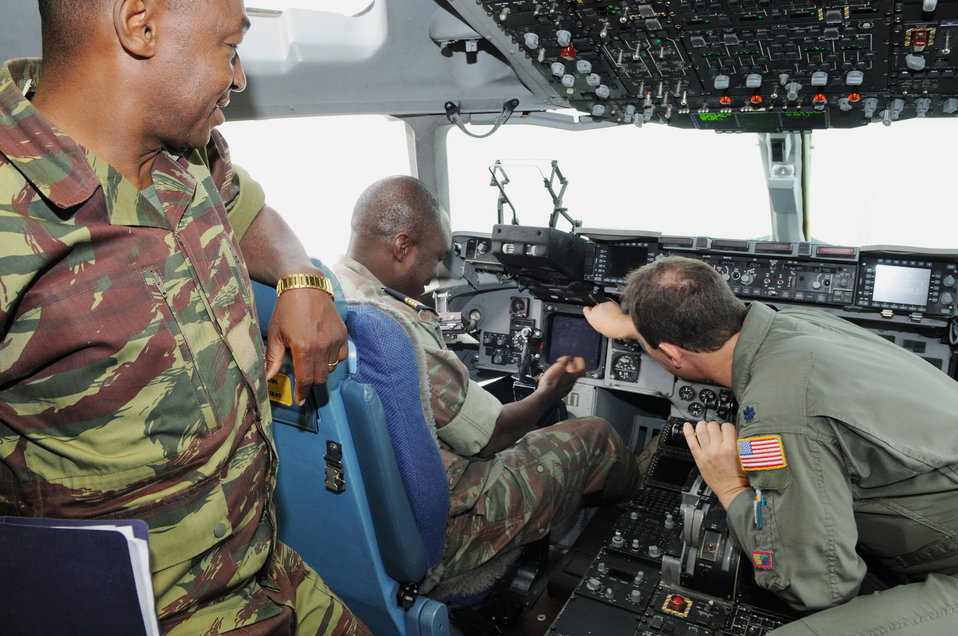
17th Air Force officials host military exchange from Africa

Lt. Col. Douglas Slipko (right) explains cockpit controls and capabilities of the C-17 Globemaster III to Lt. Dabir Dapr Paul (left) and Maj. Souleymane Ouedraogo Aug. 14 at Ramstein Air Base, Germany. Major Ouedraogo and Lt. Paul are from Burkina Faso and part of a military exchange from the West African nation to visit U.S. bases in Germany. Colonel Slipko is assigned to the of the 17th Air Force.